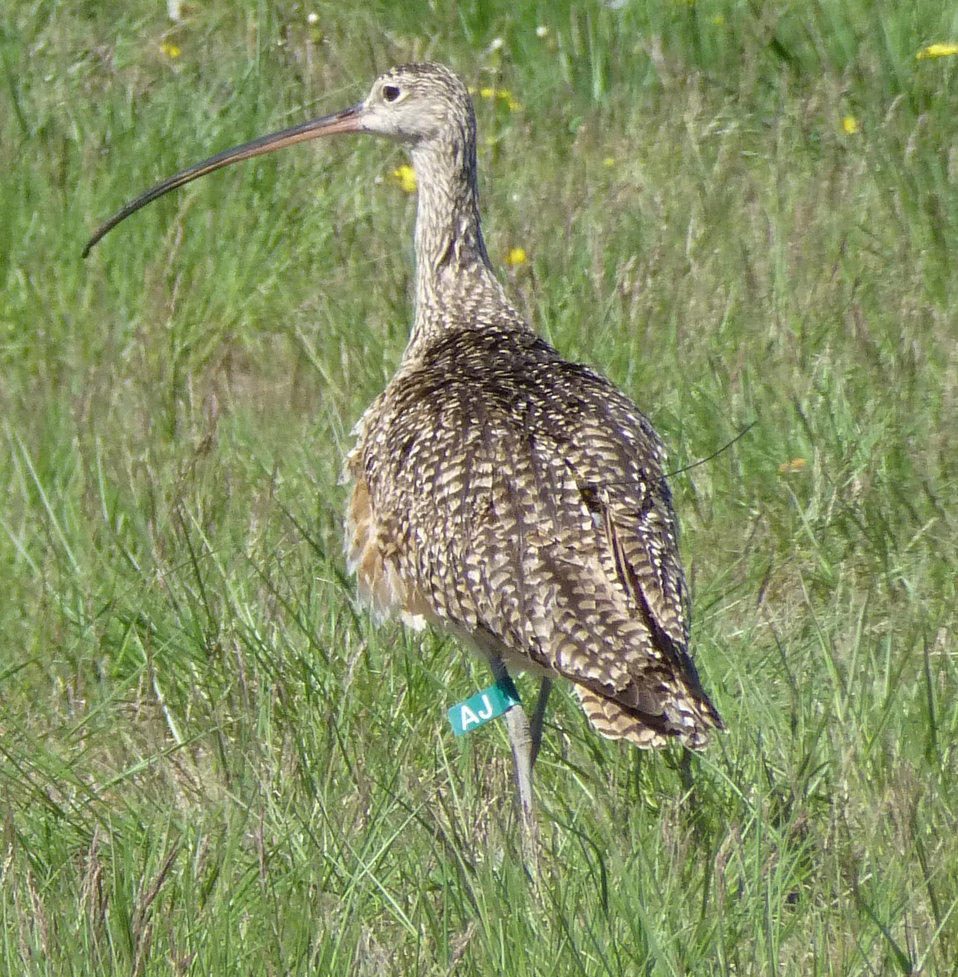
Look Carefully

Look for the satellite transmitter antenna on this long-billed curlew's back. It's easier to spot the leg band. The bird was captured and fitted with the transmitter on the National Elk Refuge as part of a larger study.